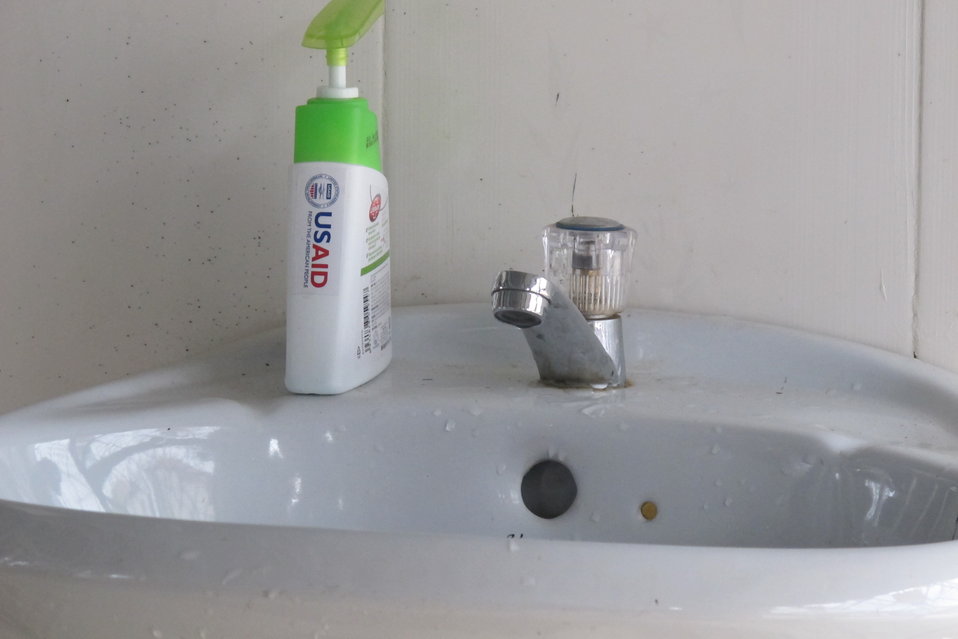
Hygiene and Sanitation at Dong Ha Poultry Market